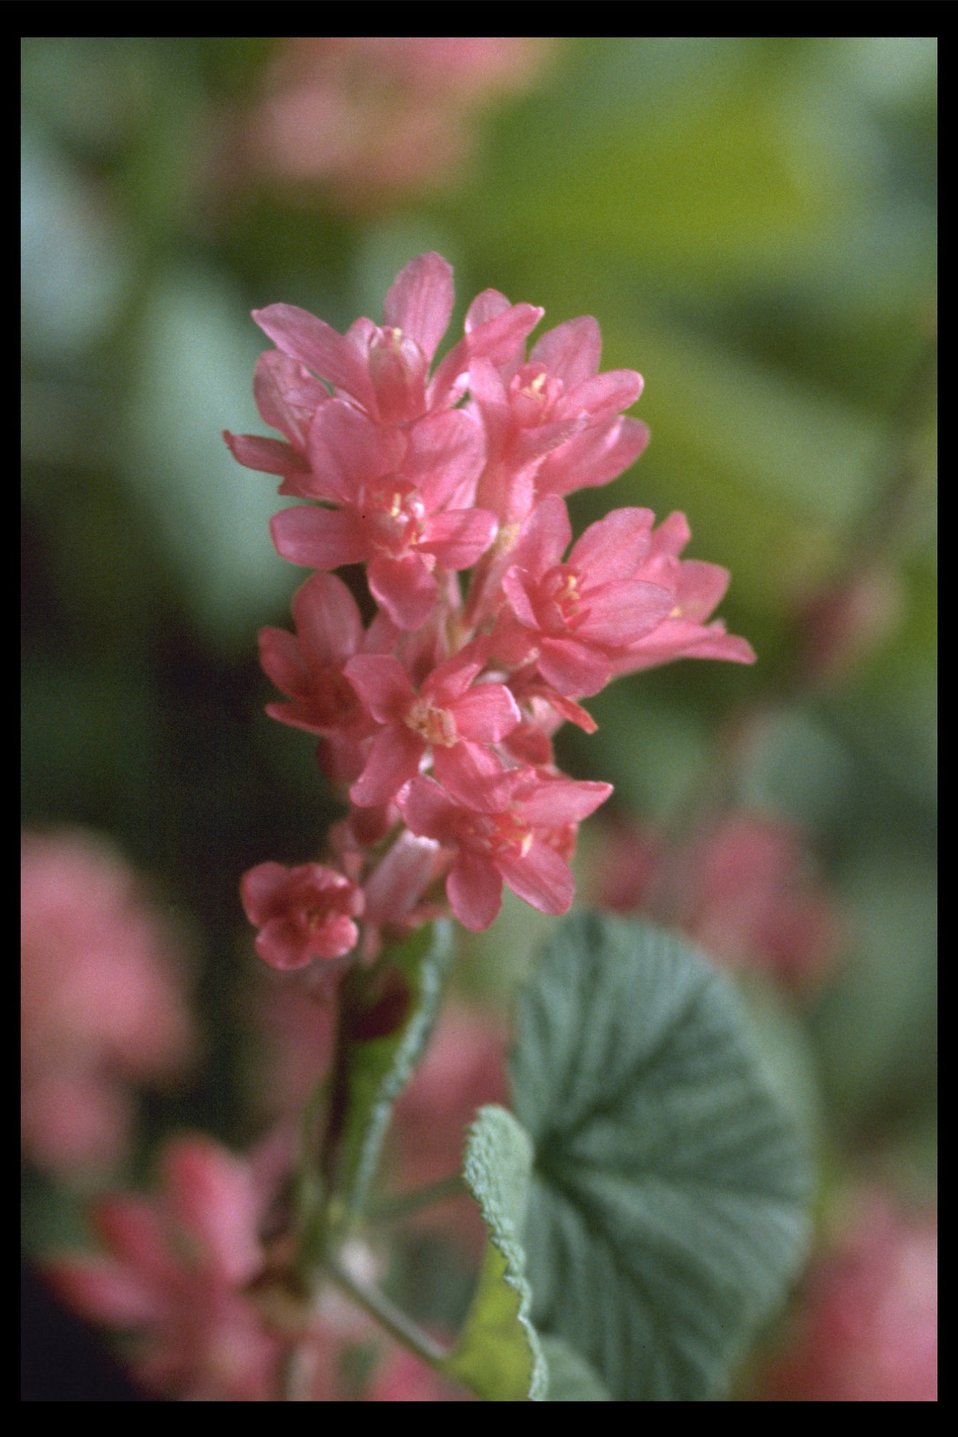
Close up of a Red-flowering Currant (Ribes sanquineum) found along Grave Creek.